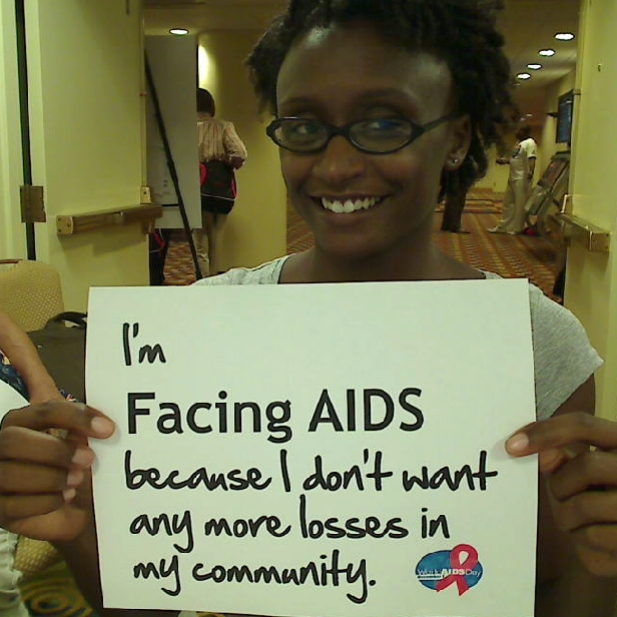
I'm Facing AIDS because I don't want any more losses in my community.